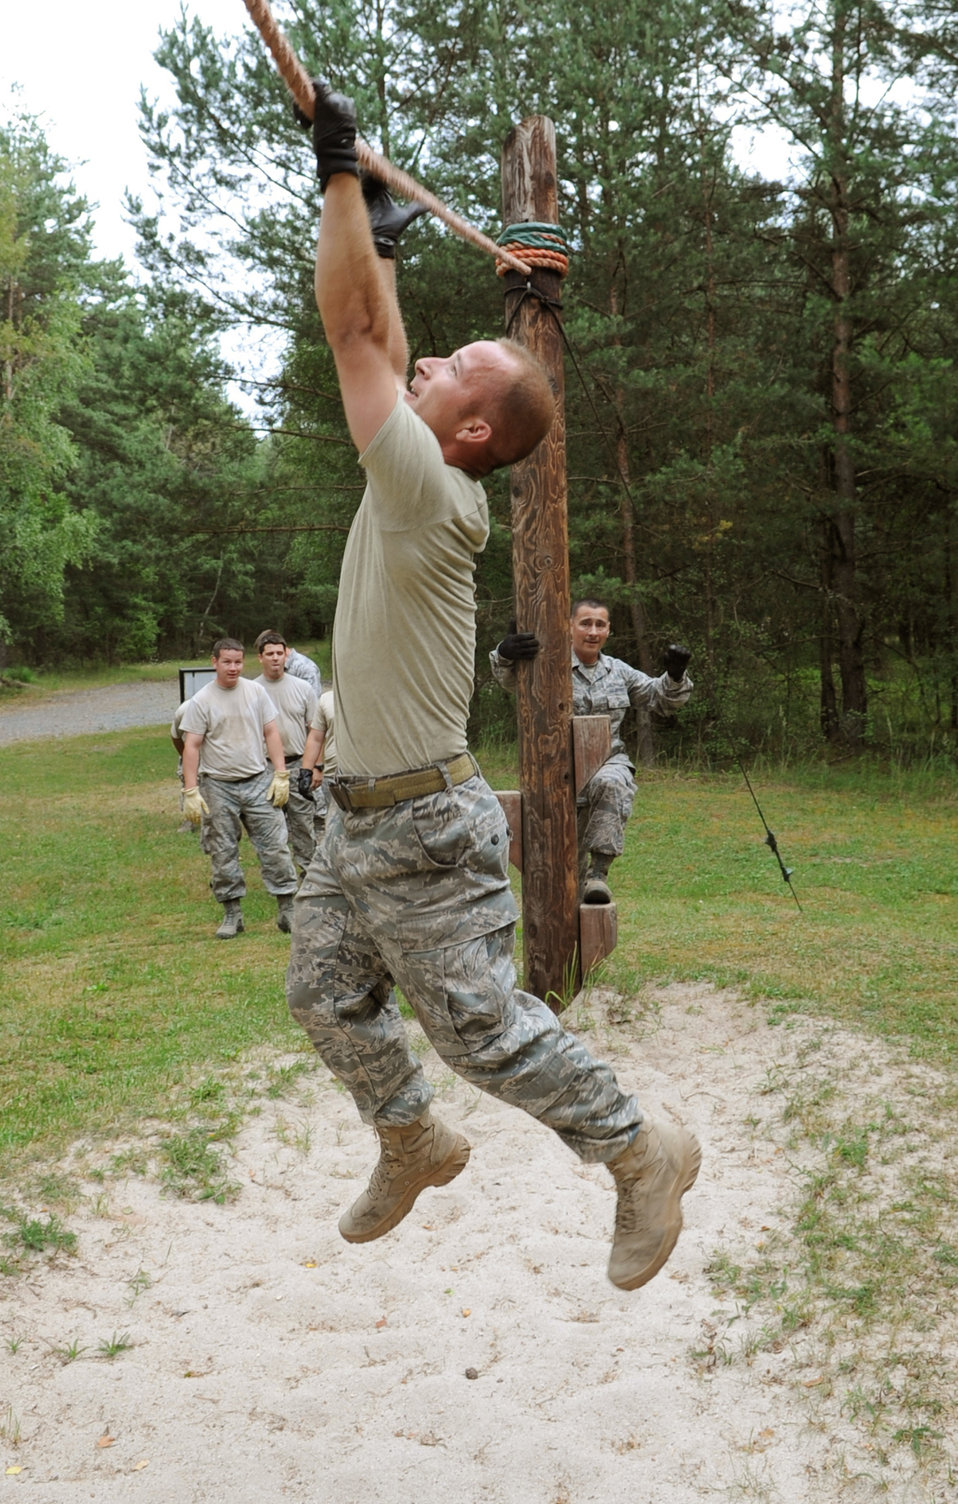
I will conquer!

Staff Sgt. Till Schanz tackles an obstacle during Exercise Allied Strike 10 at U.S. Army Garrison Grafenwoehr, Germany, July 23, 2010. Sergeant Schanz is assigned to the 4th Air Support Operations Squadron.